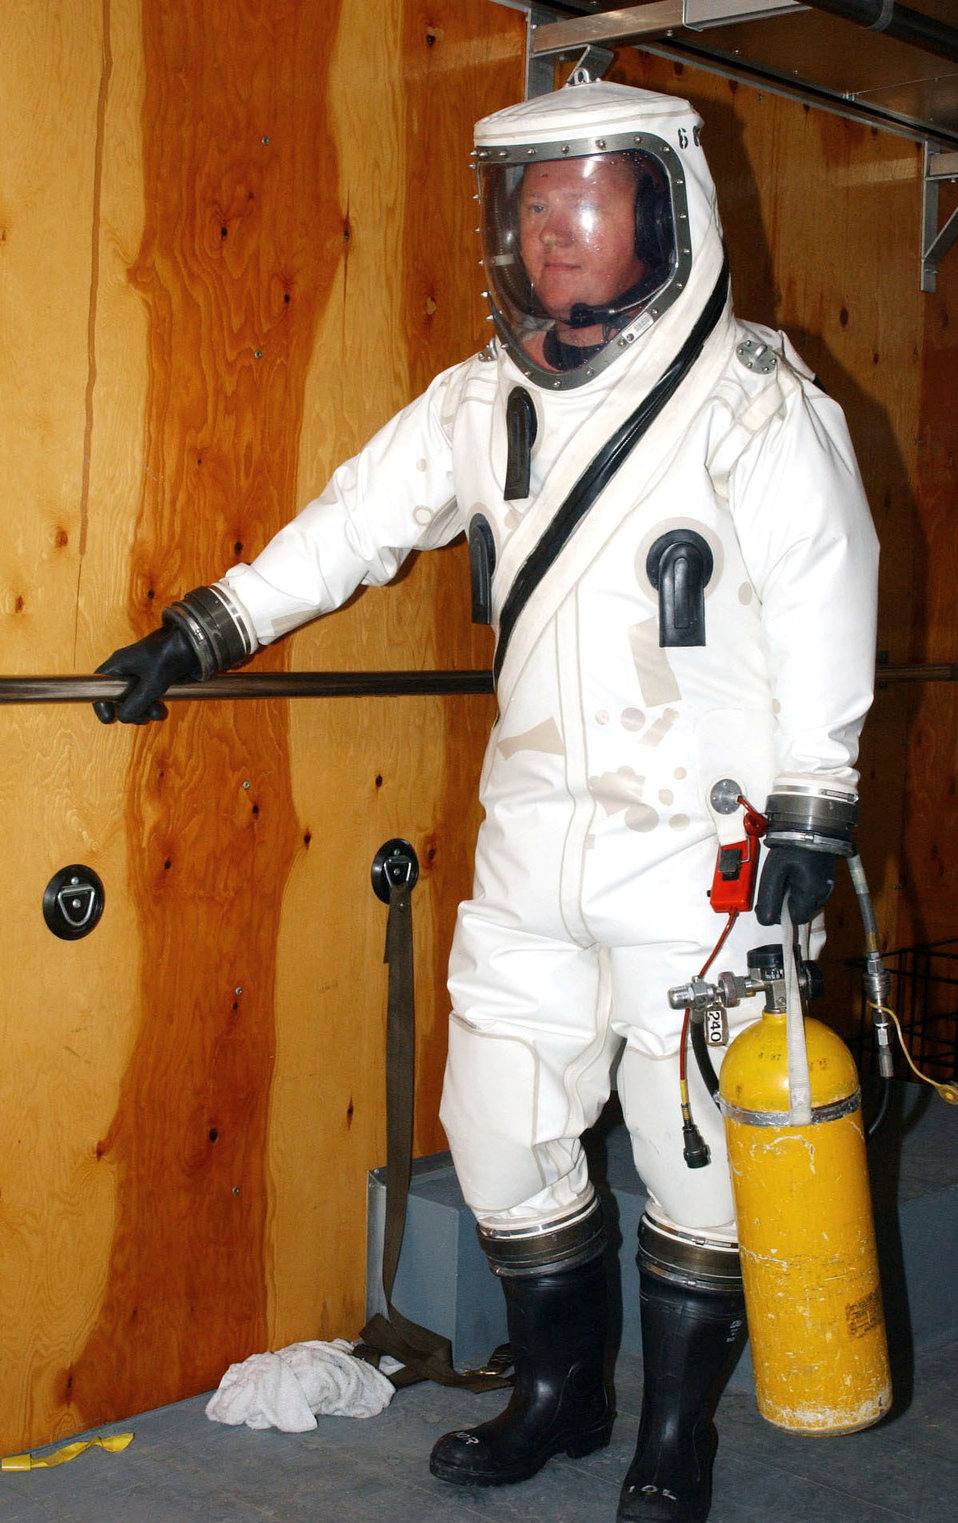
Green

CAPE CANAVERAL AIR FORCE STATION, Fla. -- Tech. Sgt. Shannon Green dons a protective suit before fuel operations here Aug. 12. Green is a booster section maintenance controller assigned to the 3rd Space Launch Squadron. The protective equipment is a mandatory safety measure all maintainers must wear before any hazardous operation at the launch pads.